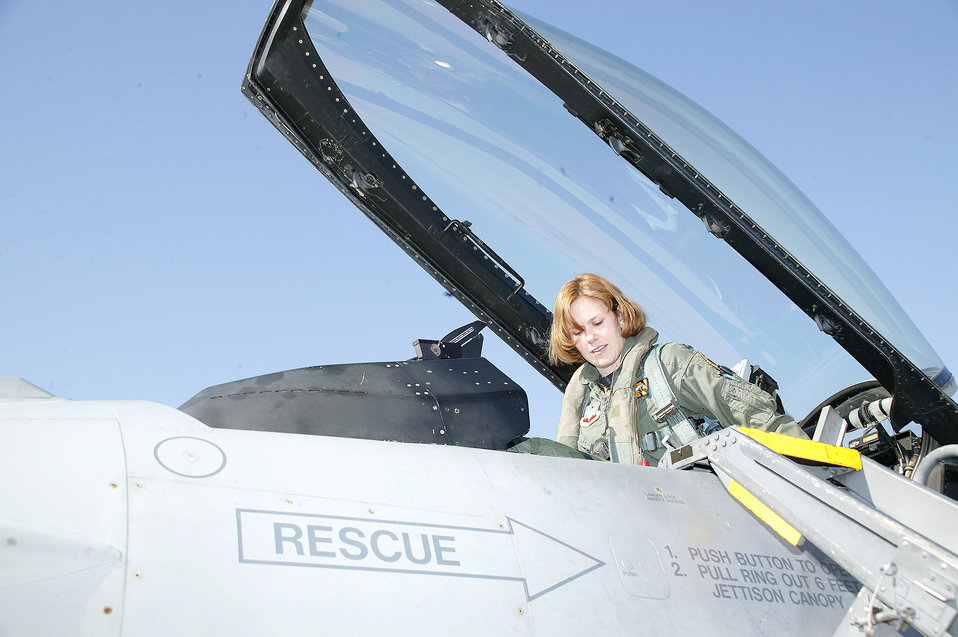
Female fighters display 'lethal, effective force'

SHAW AIR FORCE BASE, S.C. -- Capt. Gina Jennings prepares to fly an F-16 Fighting Falcon with the 79th Fighter Squadron. She is assigned to the 20th Operations Support Squadron here and is deployed supporting Operation Iraqi Freedom.